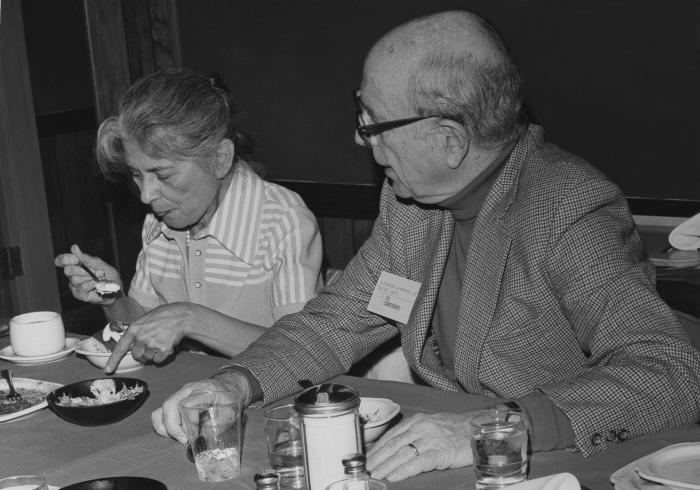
This historic photographic depicted Dr. Alexander D. Langmuir (1910 - 1993), seated to the right of Ms. Ida Sherwood during an Epidemic Intelligence Service (EIS) luncheon. Dr. Langmuir was chief epidemiologist at the Centers for Disease Control and Prevention for two decades.